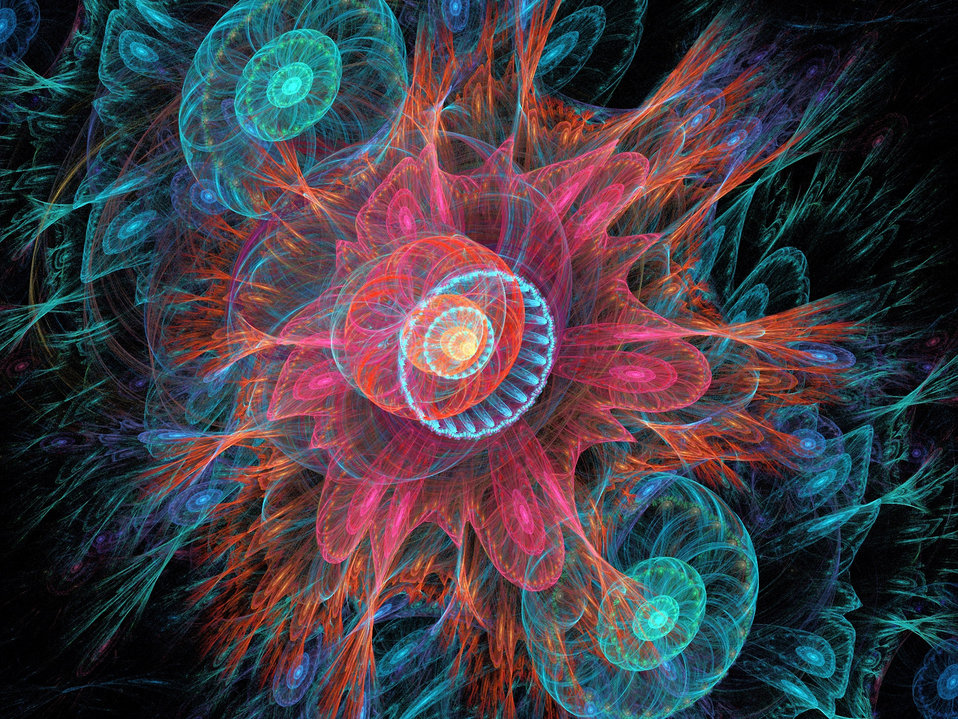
Red splash

Fractal using a script in red and green.